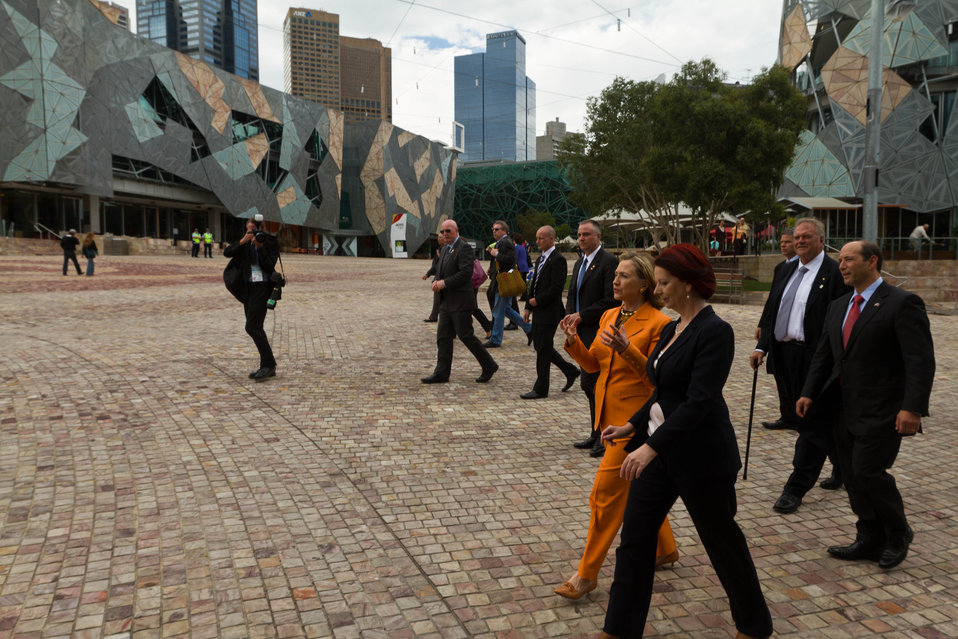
Australian Prime Minister Gillard and Secretary Clinton Walk to Lunch in Melbourne

Australian Prime Minister Julia Gillard, right, points out landmarks while walking to lunch through Federation Square with U.S. Secretary of State Hillary Rodham Clinton in Melbourne, Australia, on November 7, 2010. U.S. Ambassador to Australia Jeff Bleich is featured behind Australian Prime Minister Gillard and Australian Ambassador the U.S. Kim Beazley is featured behind the Secretary.